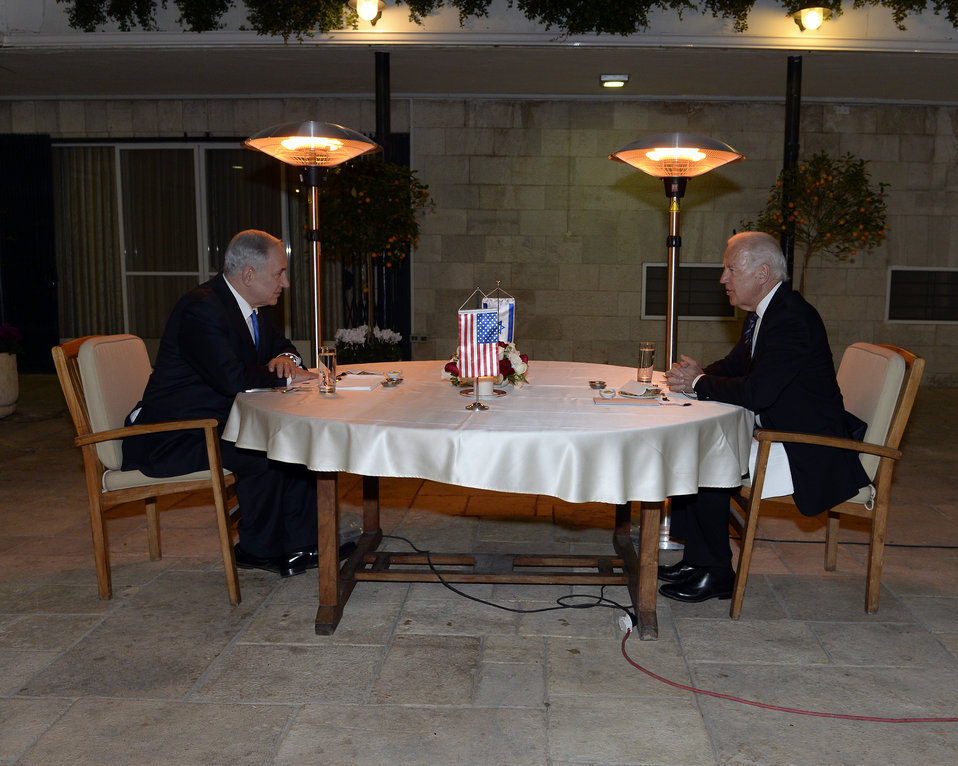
Vice President Biden Meets With Israeli Prime Minister Netanyahu

Vice President Joe Biden meets with Benjamin Netanyahu at the Prime Minister's residence in Jerusalem on January 13, 2013.